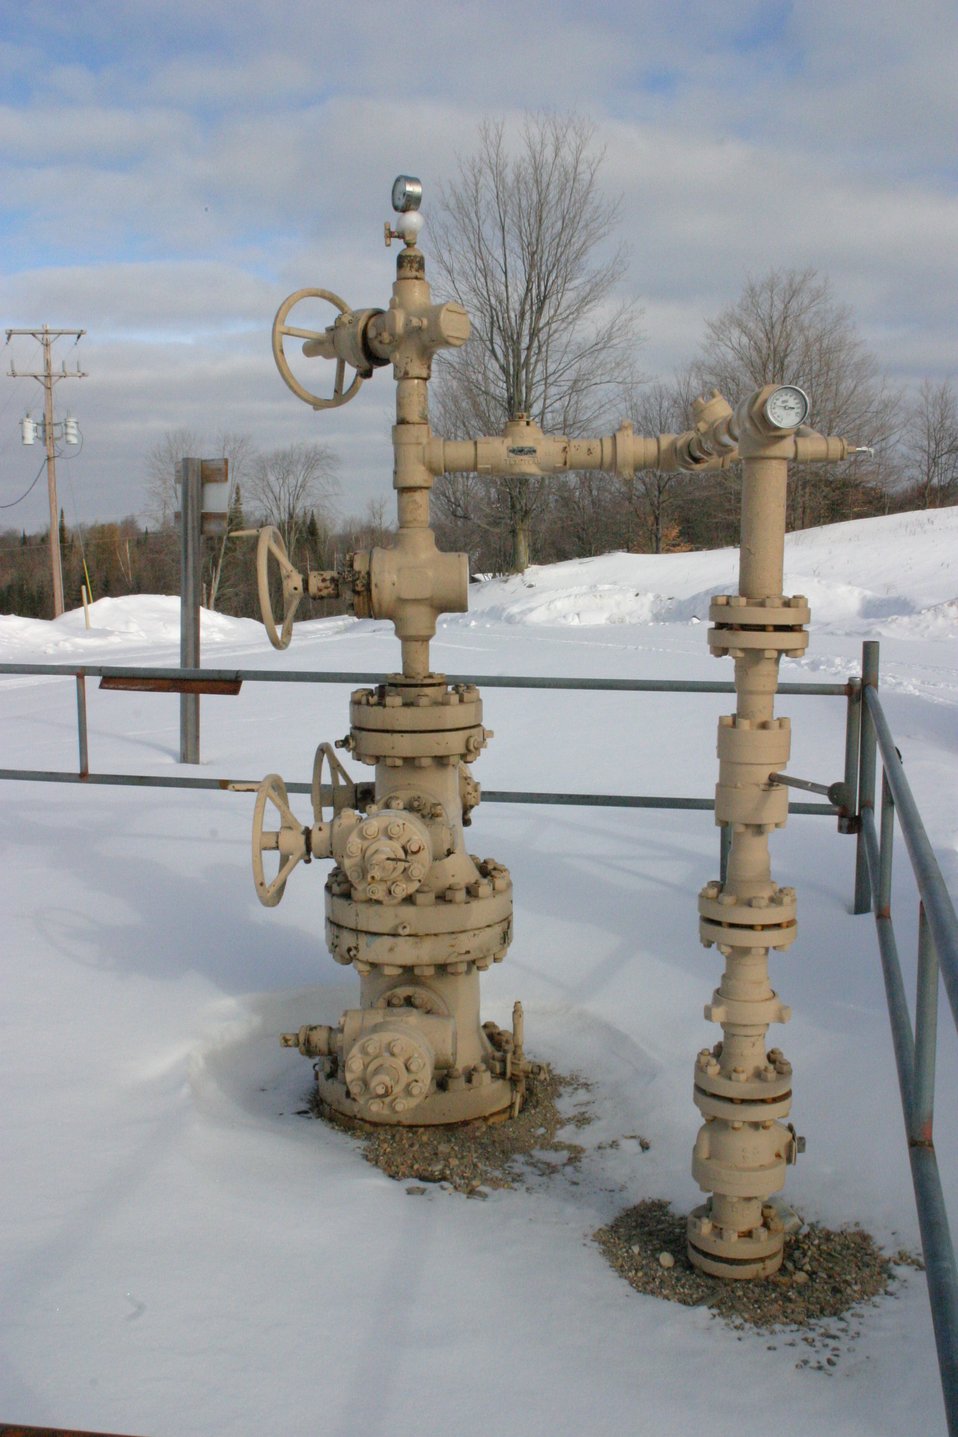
Injection pipe used for enhanced oil recovery location in Gaylord, Michigan.